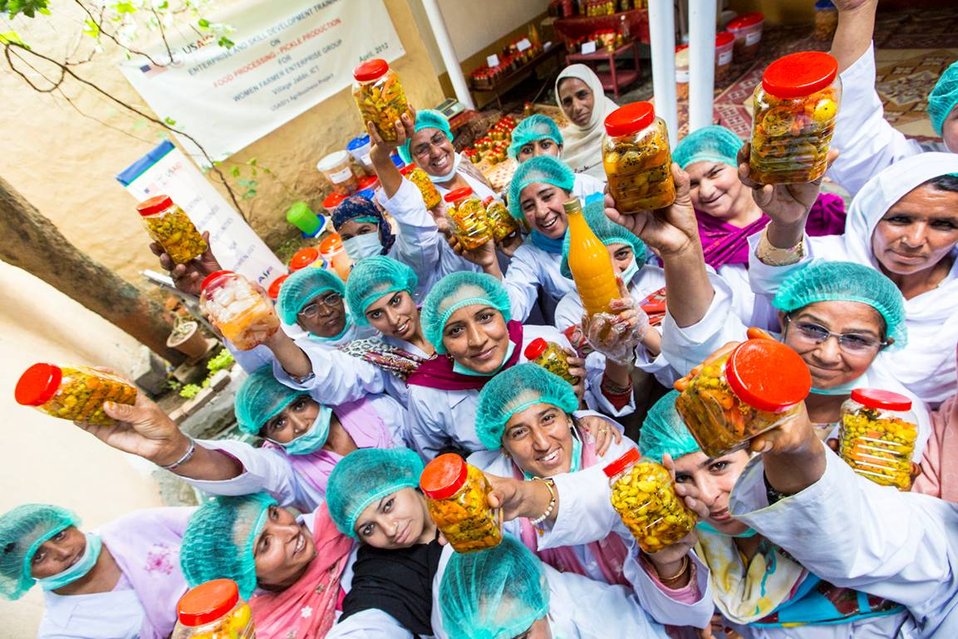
USAID's Agribusiness Project Women FEG for Food Processing - Pickle Production at Village Jabbi

Many of the women repeated that they wanted to thank USAID: 'USAID zinda-bad!'
www.usaid.gov/pk/db/sectors/growth/project 750.html